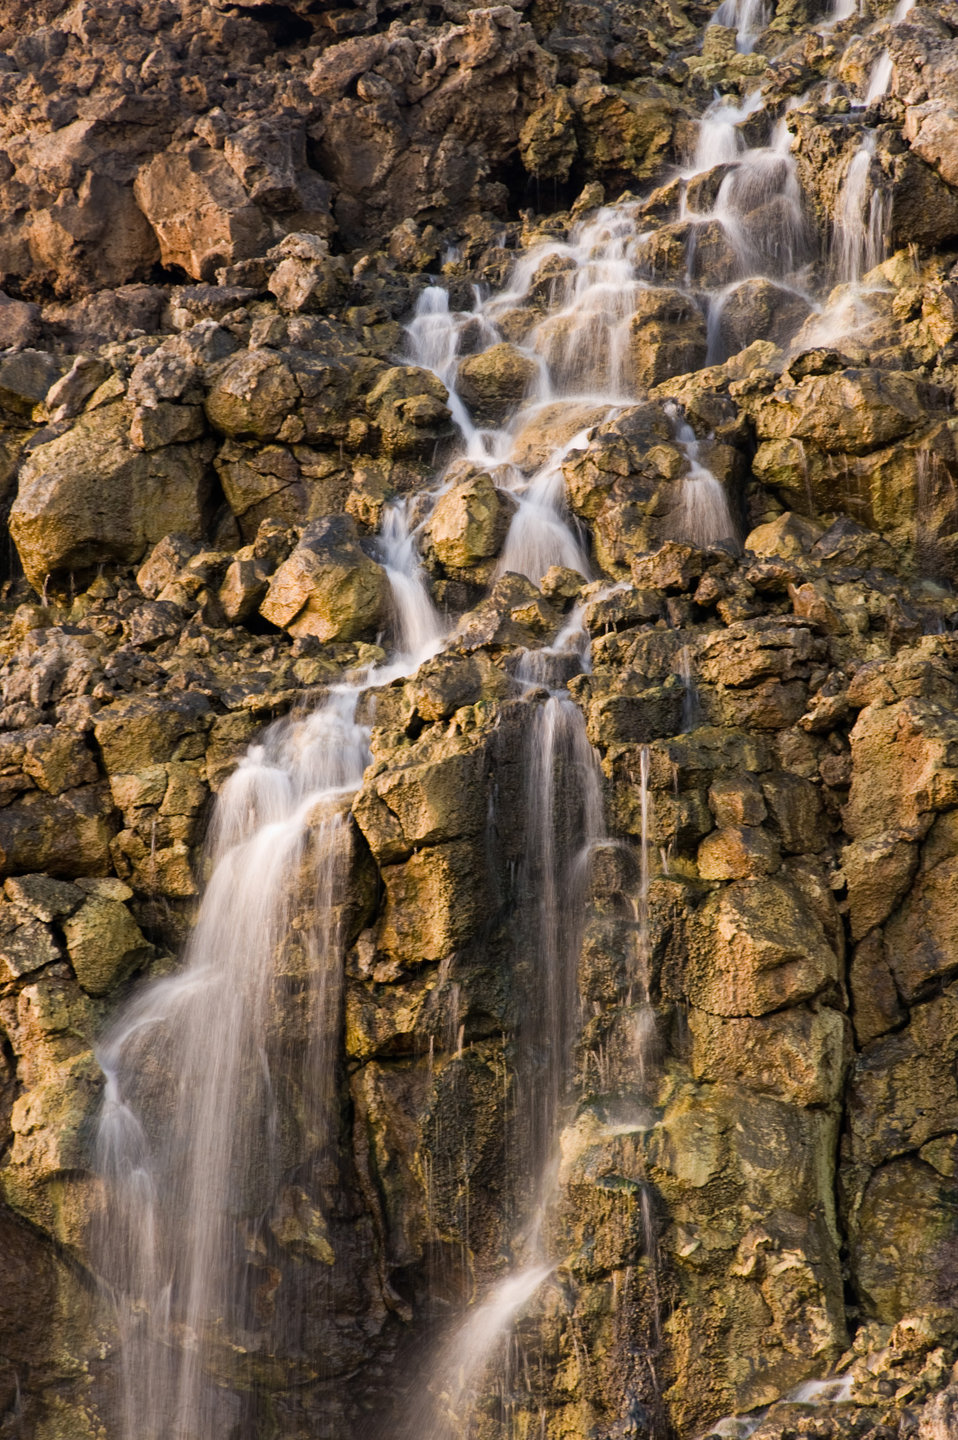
Ascension Island Green Way

Brine that was separated from the sea water by a flash steam desalination process falls from volcanic rock drop off to a runoff stream and then into the south Atlantic Ocean surrounding Ascension Island, home of the 45th Operations Group Detachment 2, Ascension Auxiliary Airfield (AAF), on June 28. 2009. This is part of the self-sufficient, power, water and waste infrastructure of the base.